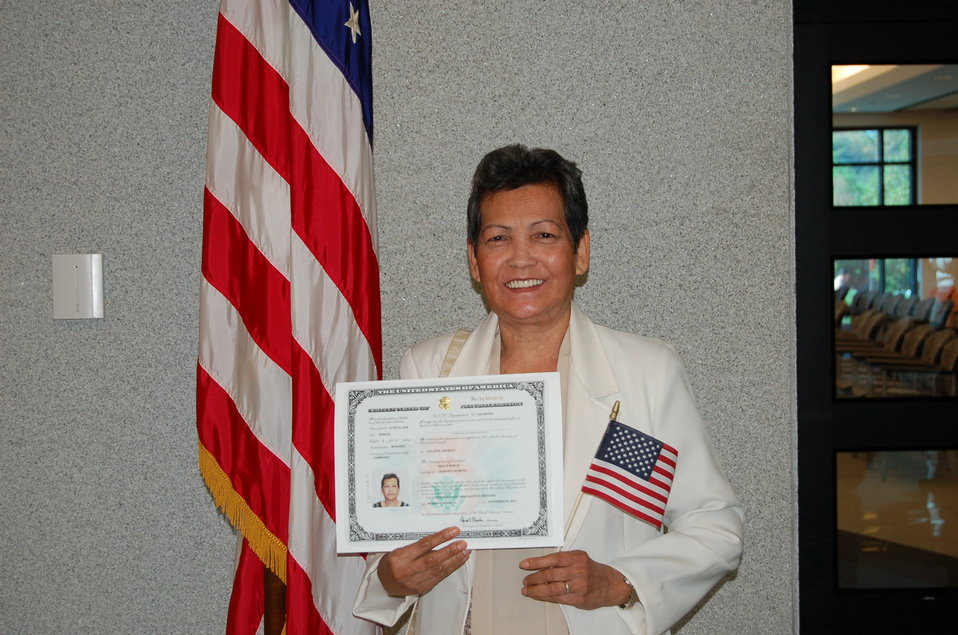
New Citizens